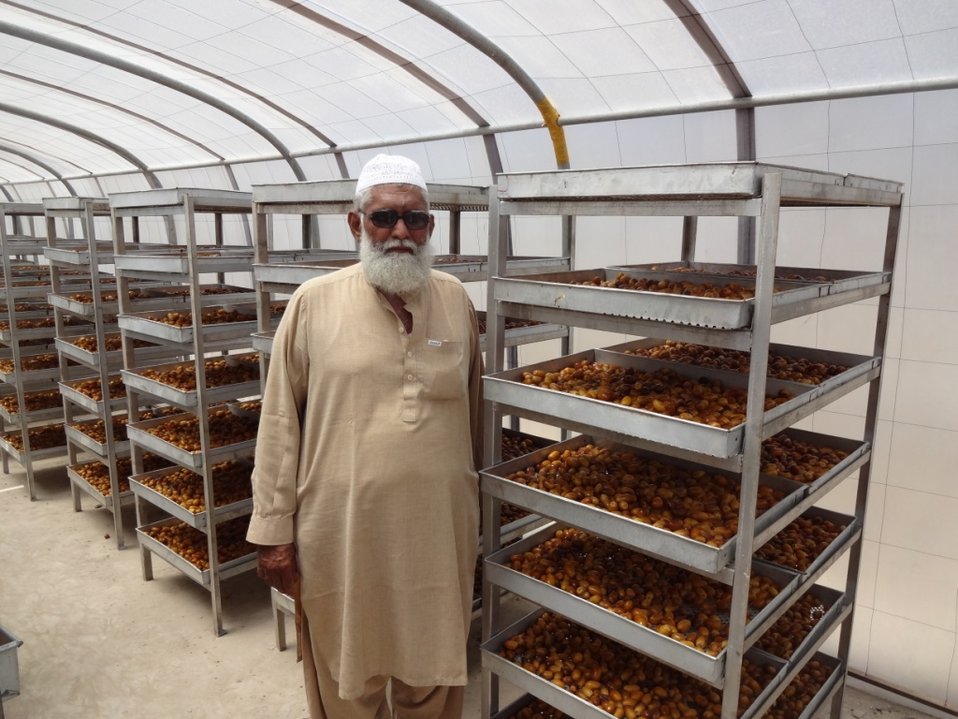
Dates Dost Program: Azam Dates Farm, Khairpur, is benefitting from USAID's assistance to increase the economic value of dates grown on 13 acres of land, owned and cultivated by Sualeh Bhutto. The partner SME (small and medium enterprise) has been recentl